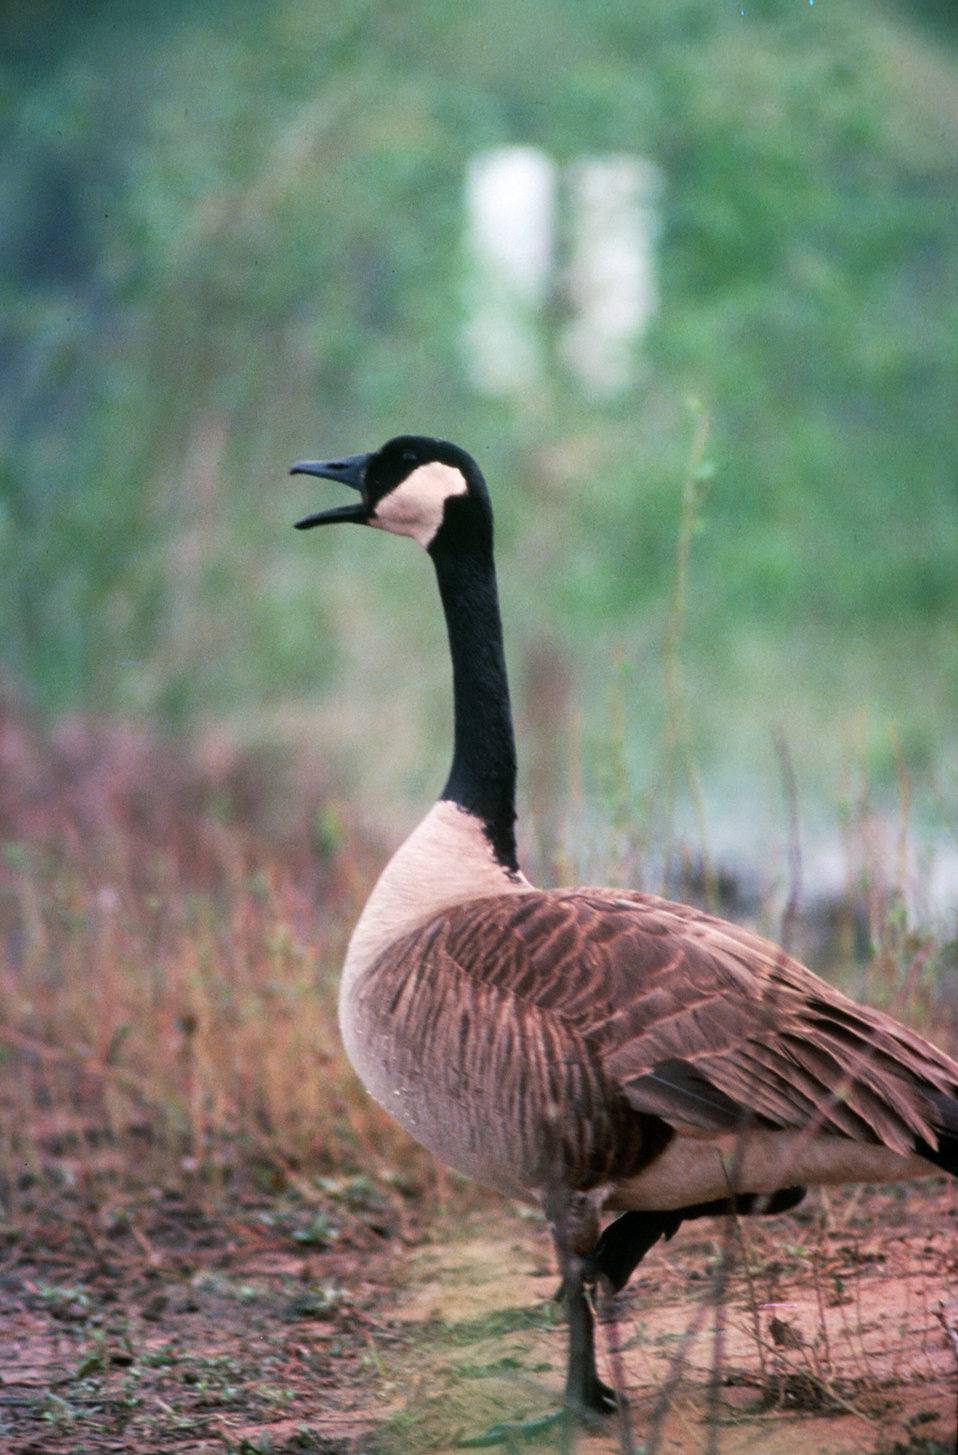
Canada goose.